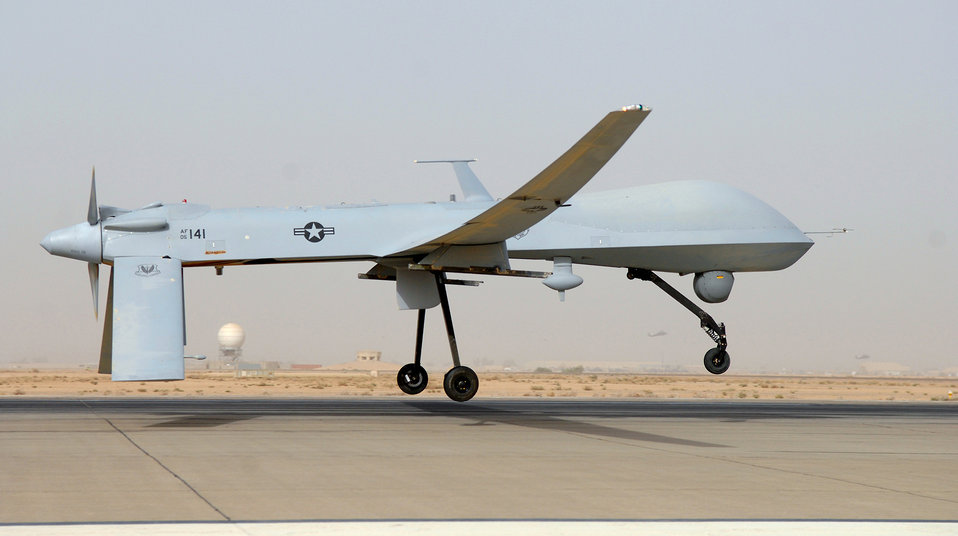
Predator crashes in southern Afghanistan

An Air Force MQ-1 Predator, like the one shown above, crashed in southern Afghanistan about 1 a.m. Kabul time Jan. 15. The crash was not due to hostile fire.